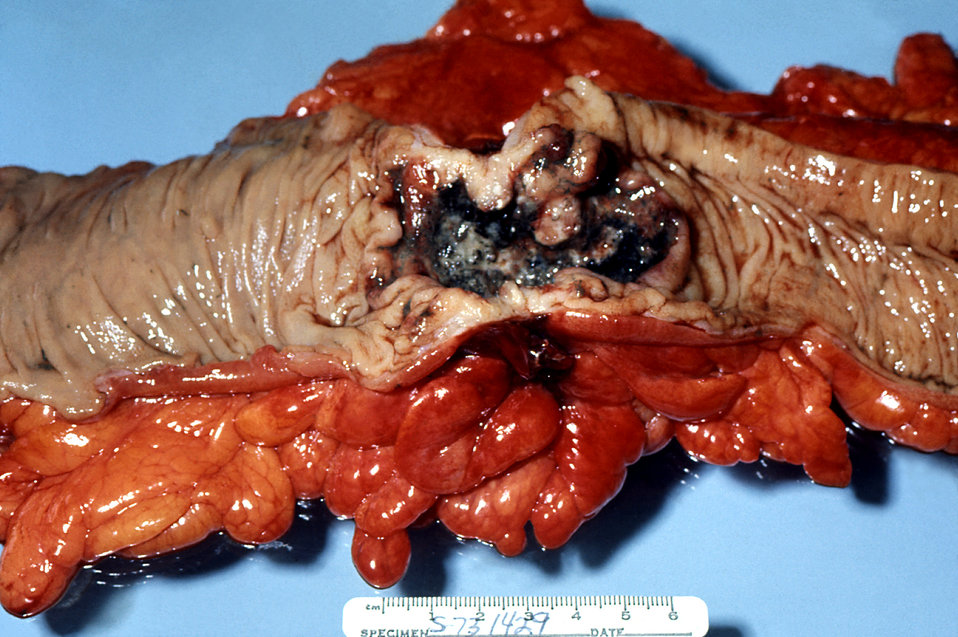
Under gross pathologic examination, this ulcerated adenocarcinomatous lesion of the colon was revealed.